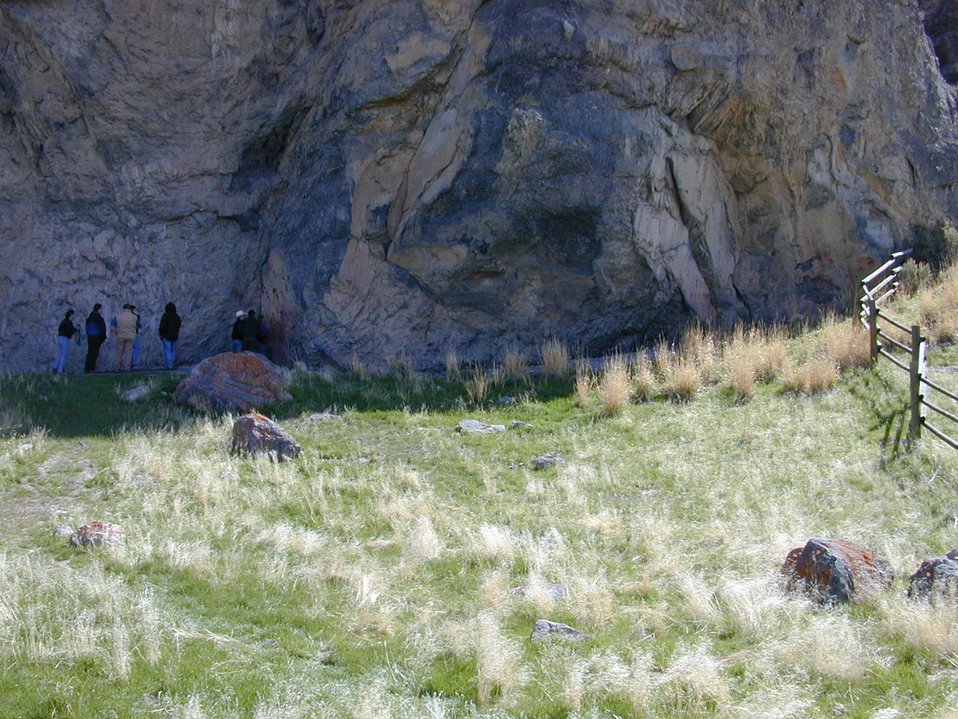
Birch Creek Valley Idaho Falls Field Office USRD Upper Snake River District